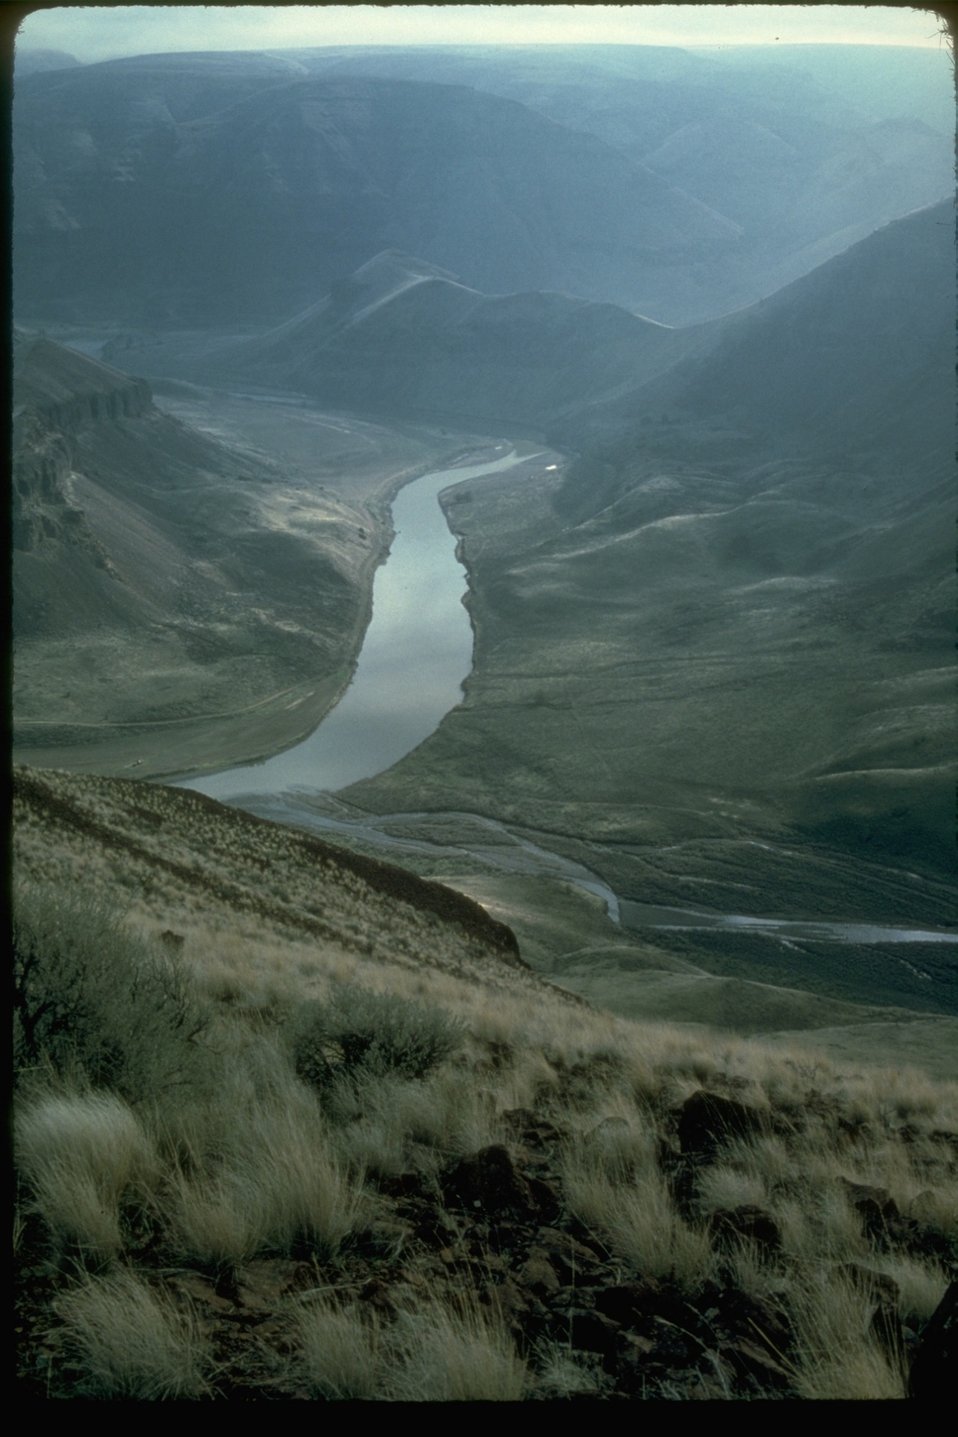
A scenic picture of the John Day River.